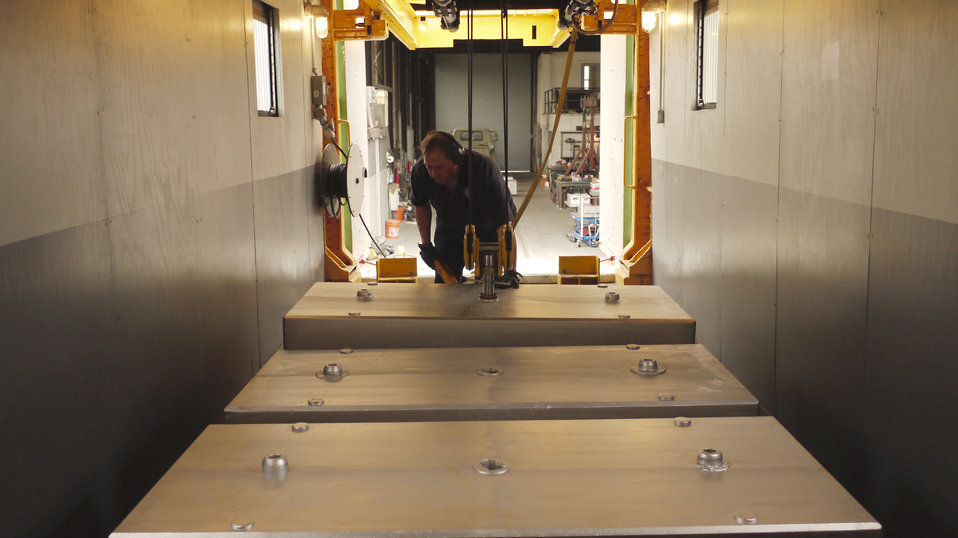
This is the U.S. Department of Agriculture’s (USDA) Grain Inspection, Packers, and Stockyard Administration (GIPSA) FGWX700000 test car unit with USDA GIPSA industrial specialist Marcus Harwitz unloading the 10,000 lb. test weight cart and 10,000 lb. test weight standards (blocks) at the USDA GIPSA Master Scale Depot in Chicago, IL on Jul 2, 2013. These weights can be loaded onto the test cart to make a total of a 100,000 lb. test weight group including the cart that is used to test railroad track scales for calibration. . USDA GIPSA entered into an agreement with the National Institute of Standards and Technology (NIST) and the Association of American Railroads (AAR) in 1980 transferring responsibility to USDA’s GIPSA to maintain the Master Scale facility in Chicago, IL and calibrate all the master scales in the continental U.S. annually.